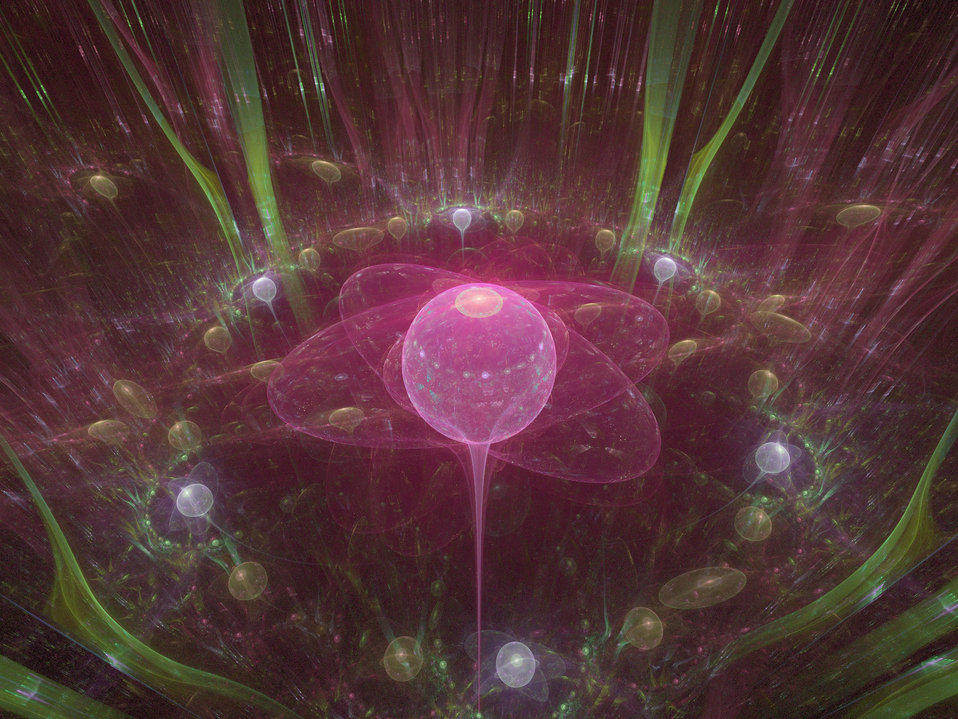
Surreal pink ball

Fractal ball in pink.